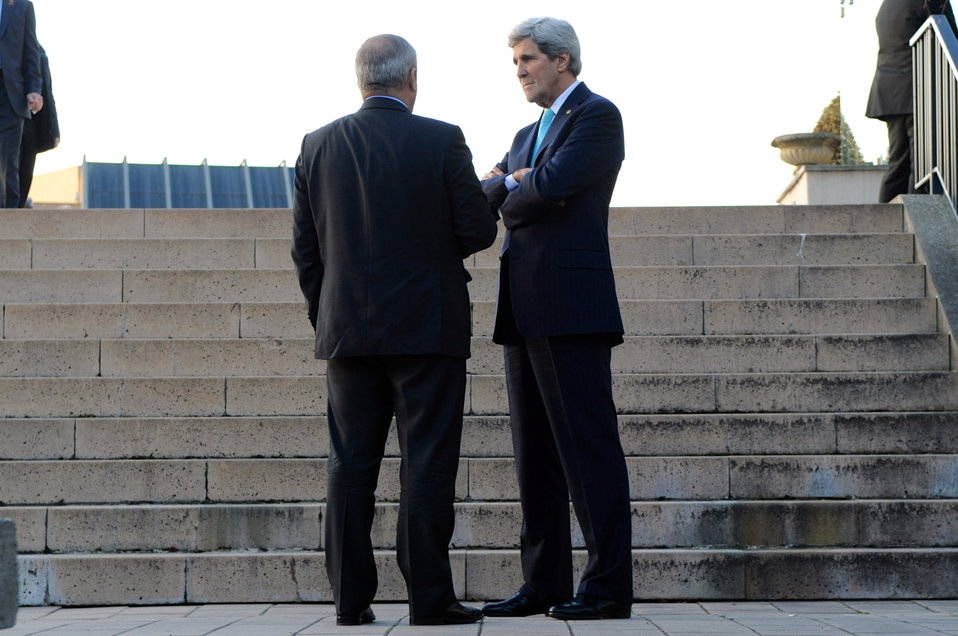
Secretary Kerry Meets With Jordanian Foreign Minister Judeh at Geneva II Conference

U.S. Secretary of State John Kerry and Jordanian Foreign Minister Nasser Judeh hold a one-on-one discussion on the margins of the Geneva II conference in Montreux, Switzerland, on January 22, 2014.